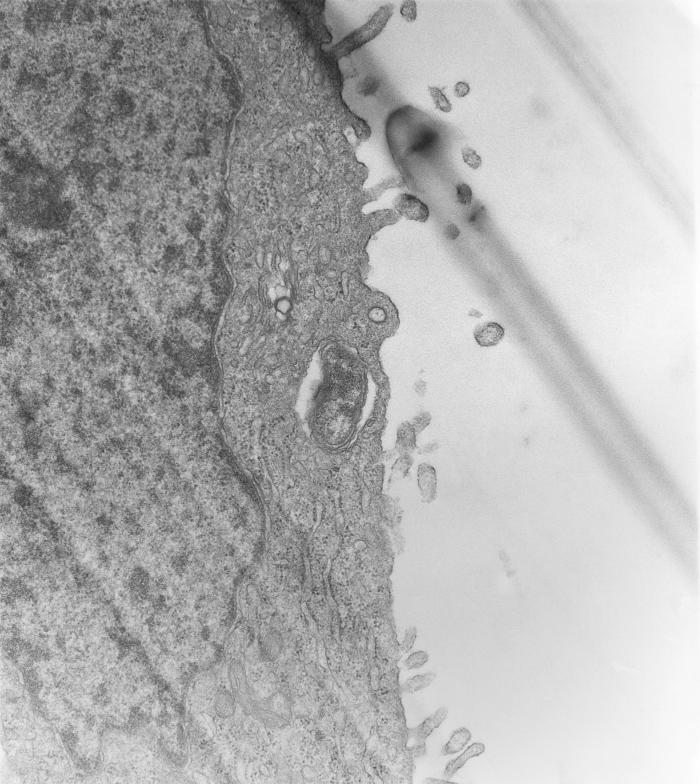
This 1976 transmission electron micrograph (TEM) depicted a hypertrophic peritoneal mesothelial cell from a mouse that had been experimentally infected intraperitoneally with Orientia tsutsugamushi rickettsial micro-organisms. This micrograph captured an organism as it appeared within a phagocytic vacuole, still bearing a third outer membrane layer of probable host cell origin.